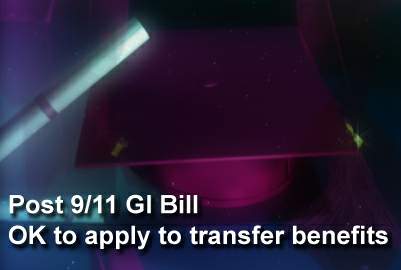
Post 9/11 GI Bill

Eligible Airmen can now apply to transfer Post 9/11 GI Bill benefits to dependents. Airmen, however, are encouraged to use caution, foresight and patience when applying to transfer benefits.